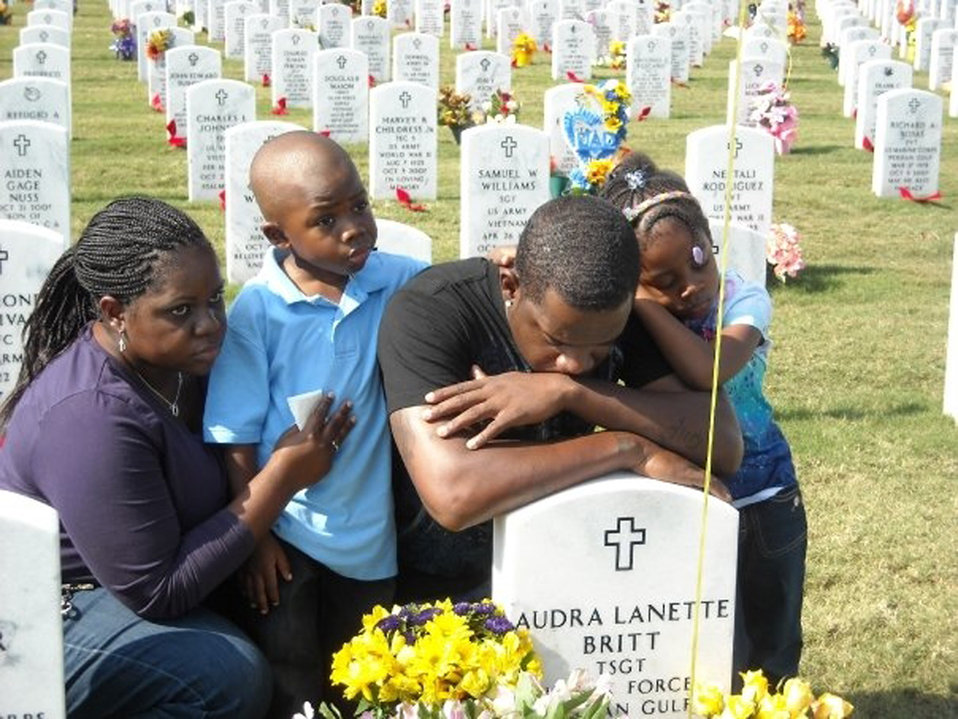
Critical Days

Mourning at the grave of Tech. Sgt. Audra Britt are, from left, her sister, Anika Lee; her son, Nathaniel Alexander Britt; her brother, Staff Sgt. Aron Lee; and his daughter, Kennedy Misarah Amaya Lee.